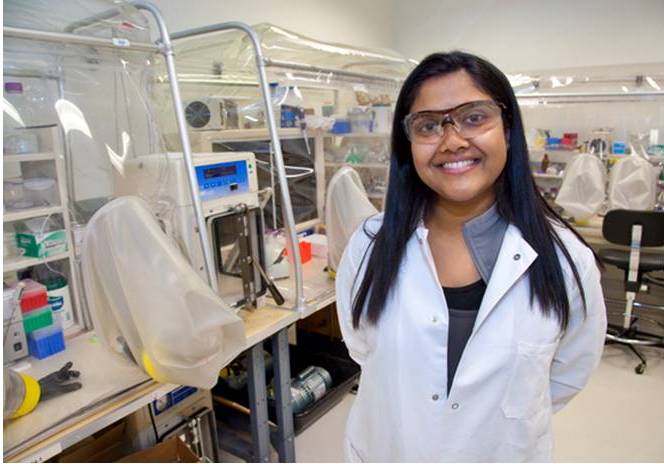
Aindrila Mukhopadhyay

Dr. Aindrila Mukhopadhyay’s interdisciplinary team at the Berkeley Lab is studying signaling and stress response in both environmental and engineered organisms. They are part of the ENIGMA project where their research includes the study of two component signaling in the model sulfate reducing bacterium Desulfovibrio vulgaris Hildenborough. As part of the Joint BioEnergy Institute they adopt targeted and systems biology approaches to elucidate causes of inhibition during fuel/solvent production from lignocellulose using the host microbes such as Escherichia coli and Saccharomyces cerevisiae. They hope to engineer better hosts for metabolite production and develop tools that are universally useful for microbial cellular engineering. Recently they have also become interested in studying signaling and response in cyanobacteria that dominate desert soil crusts.

Read her full story at energy.gov/diversity/articles/women-energy-aindrila-mukho...